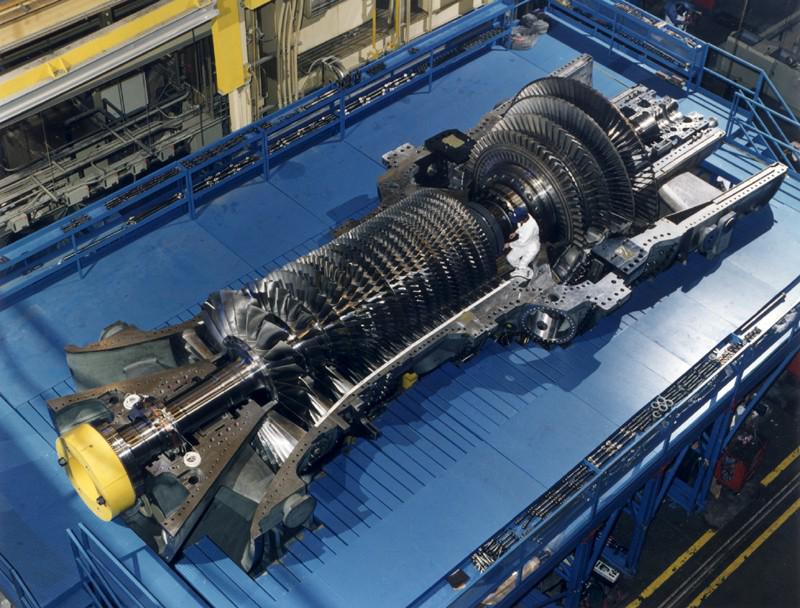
GENERAL ELECTRIC'S H SYSTEM GAS TURBINE SHOWING THE 18-STAGE COMPRESSOR AND 4-STAGE TURBINE.

NATURAL GAS TURBINES ARE BEING DEVELOPED TO PRODUCE ELECTRICITY IN A SIMPLE, LOW COST ENVIRONMENTALLY FRIENDLY WAY. DOE'S NATIONAL ENERGY TECHNOLOGY LABORATORY (NETL) INITIATED THE ADVANCED TURBINE SYSTEMS (ATS) PROGRAM AND HAS PARTNERED WITH INDUSTRY TO PRODUCE A NEW GENERATION OF HIGH EFFICIENCY GAS TURBINES FOR CENTRAL STATION ELECTRICITY PRODUCTION, USING CLEAN BURNING NATURAL GAS.